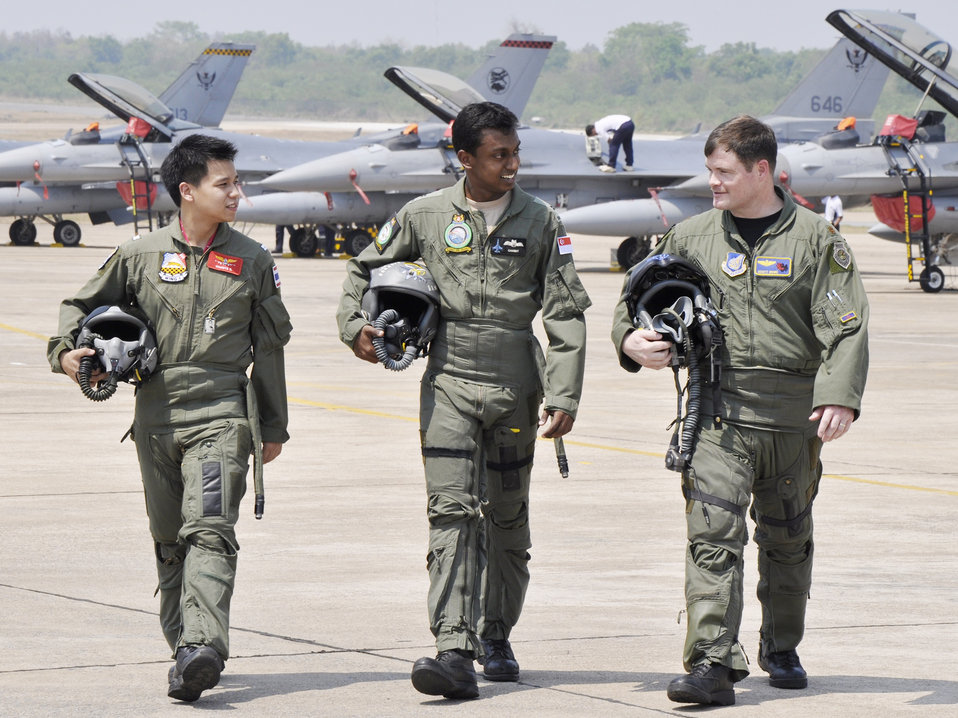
Cope Tiger 2010

Maj. Scott Rowe (right) talks about his participation in Cope Tiger with his counterparts from the Royal Thai Air Force and the Republic of Singapore Air Force March 8, 2010, at Korat Royal Thai Air Force Base, Thailand. Major Rowe is an F-15 Eagle pilot from the 19th Fighter Squadron at Elmendorf Air Force Base, Alaska.